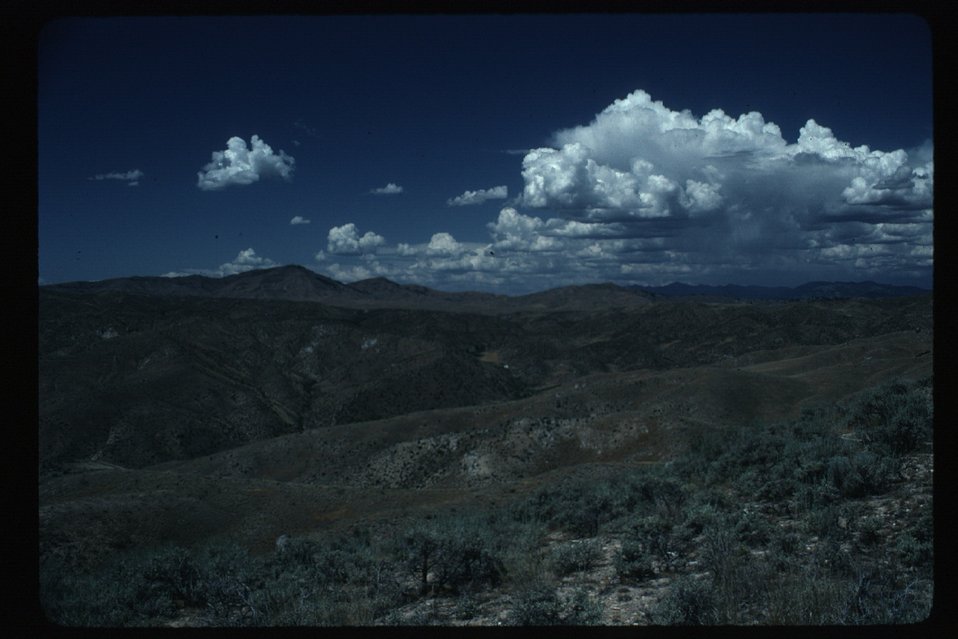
Rangeland Four Rivers Field Office LSRD Lower Snake River District